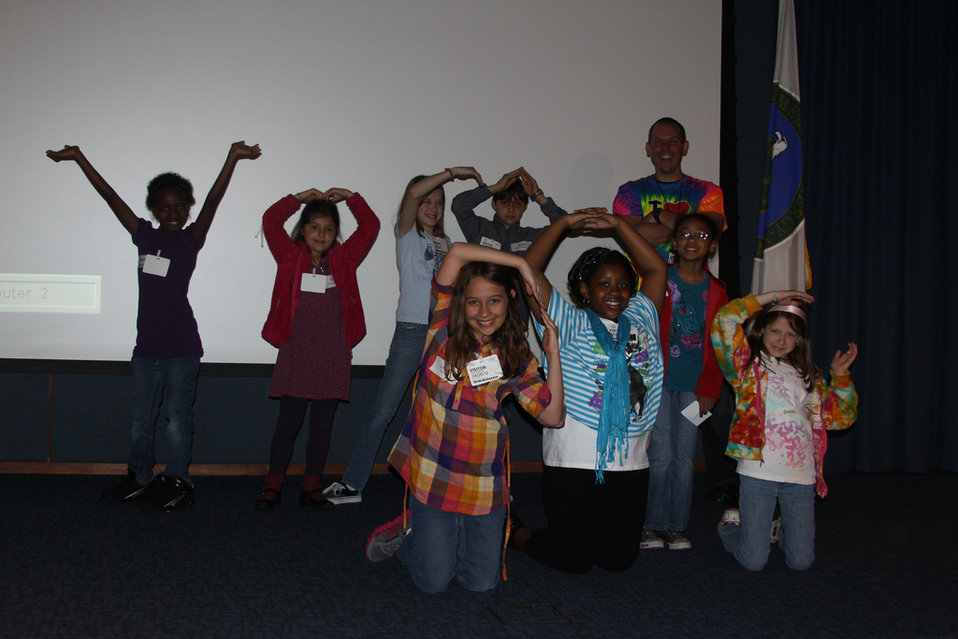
Doug's Group